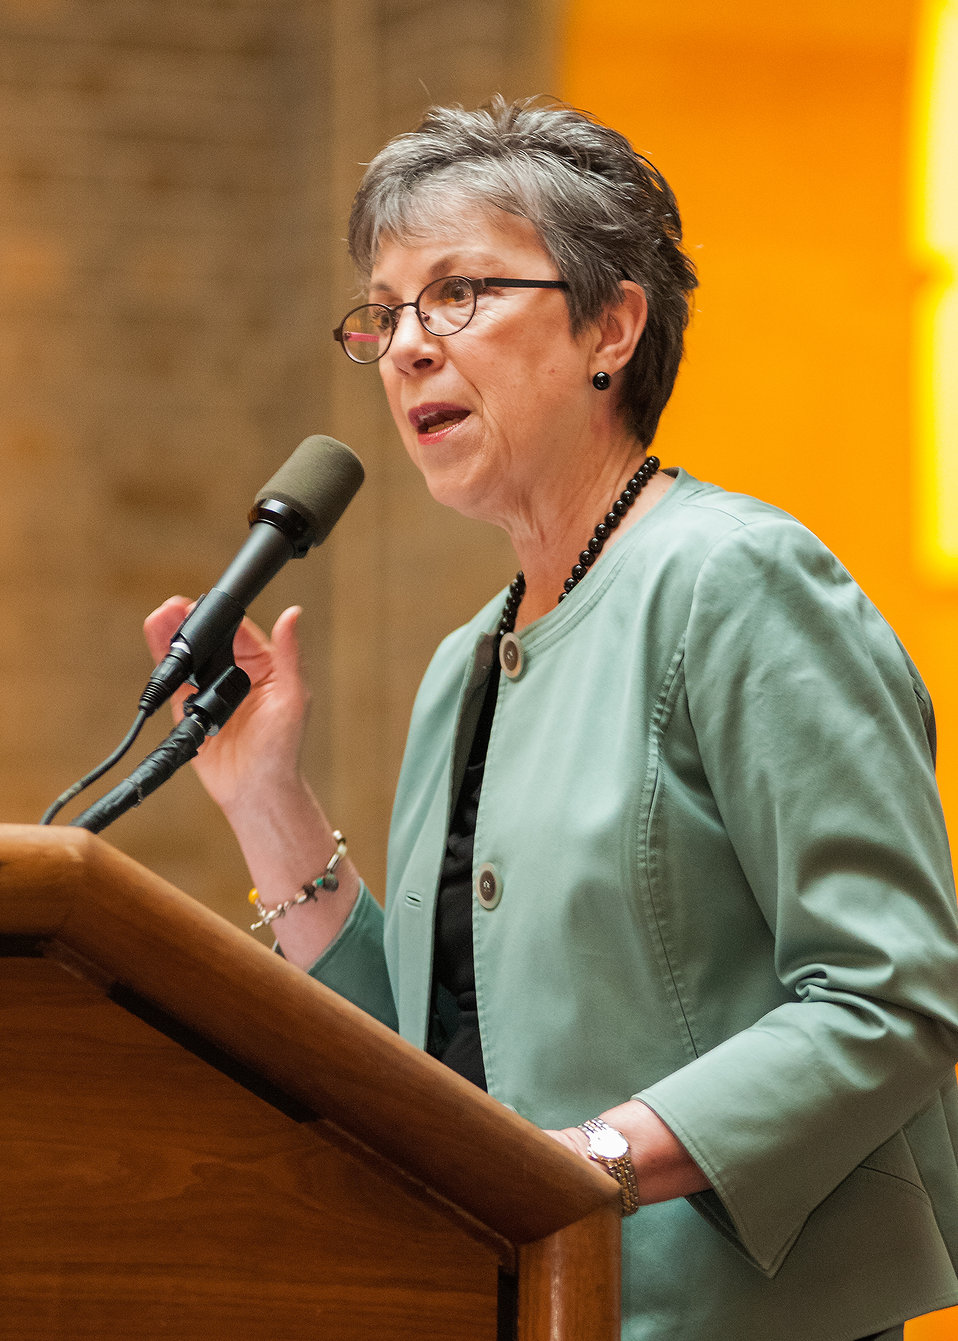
Agriculture Under Secretary for Research, Education and Economics (REE) Dr. Catherine Woteki welcomes participants to the U.S.-Israel Bio-Challenge Symposium at the U.S. Department of Agriculture (USDA) in Washington, D.C. on Thursday, Apr. 18, 2013.